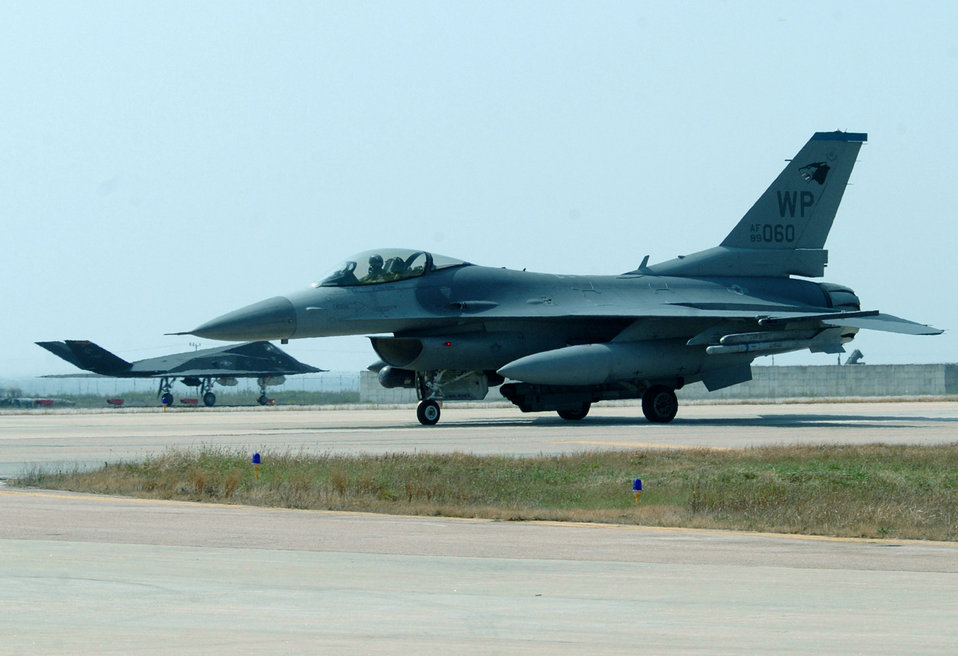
Holloman Airmen train at Kunsan

KUNSAN AIR BASE, South Korea -- An F-16 Fighting Falcon (foreground) from the 8th Fighter Wing here and an F-117 Nighthawk from the 49th Fighter Wing at Holloman Air Force Base, N.M., share the taxiway. About 300 Airmen from Holloman are currently deployed here supporting operations in the Pacific region.